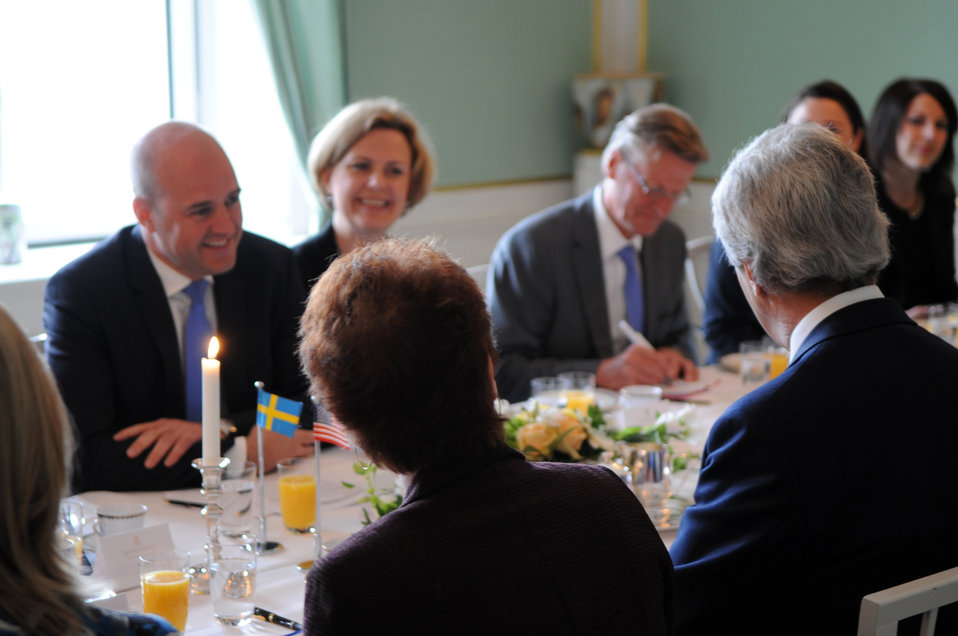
Secretary Kerry Meets With Swedish Prime Minister Reinfeldt

U.S. Secretary of State John Kerry meets with Swedish Prime Minister Fredrik Reinfeldt on May 14, 2013 in Stockholm, Sweden.